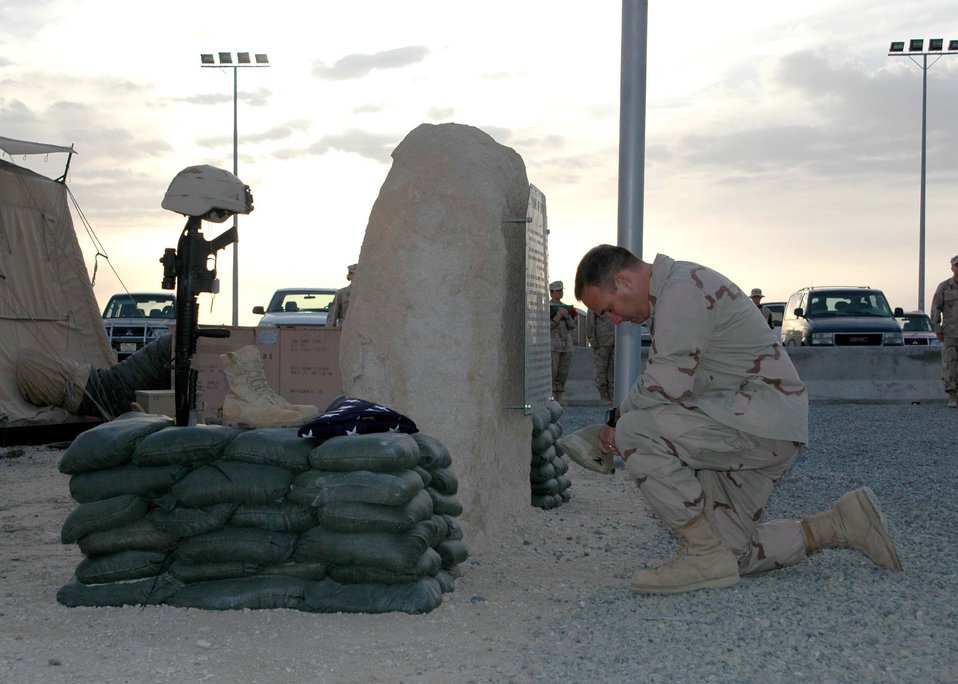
Memorial service held for fallen Airmen

SOUTHWEST ASIA -- Col. Tim Hale prays for two fallen Airmen during a memorial retreat here Jan. 27. More than 500 people attended the retreat ceremony which honored Tech. Sgt. Jason Norton and Staff Sgt. Brian McElroy. The Airmen were killed in Iraq by an improvised explosive device.